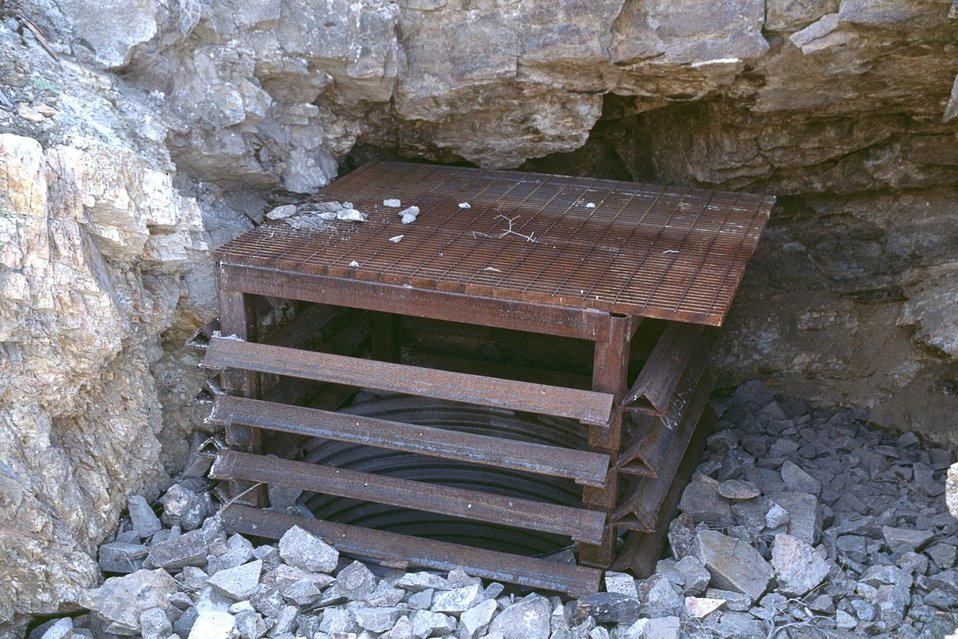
AML Kaaba-Texas Mine. Bat grate at entrance to vertical shaft. Spokane District, Washington.